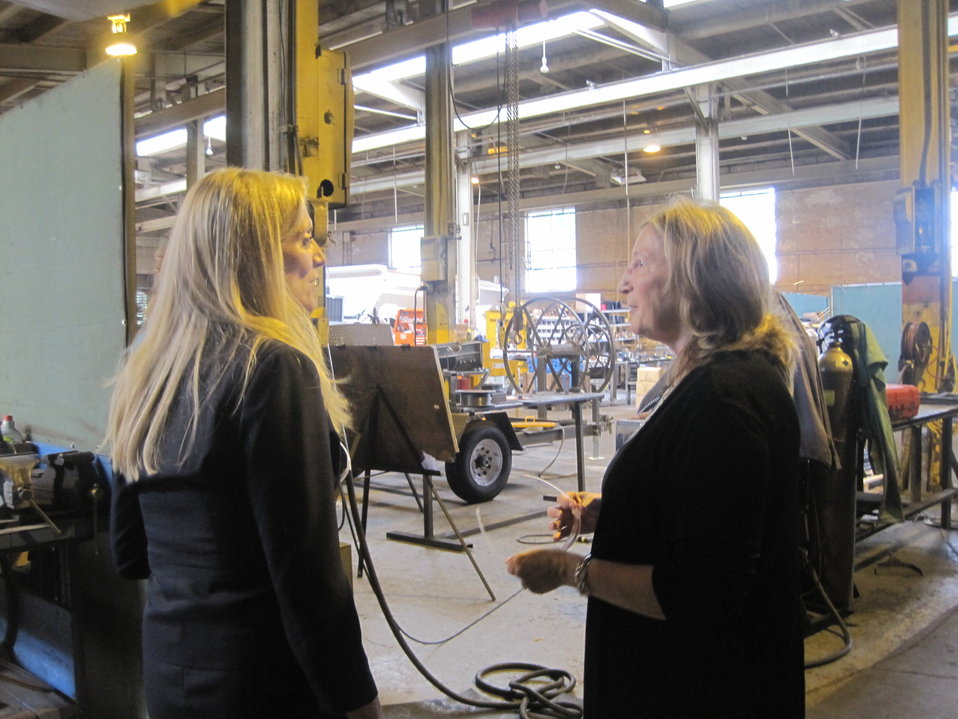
Under Secretary for International Affairs Lael Brainard visits Cincinatti, Ohio

Brainard visited several manufacturing plants in the area that have increased exports.